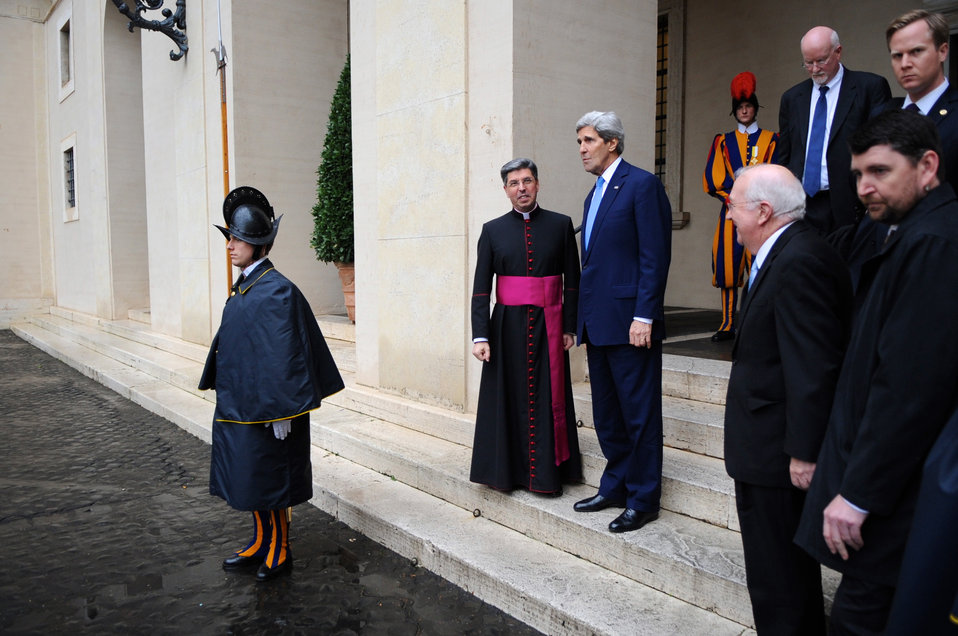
Secretary Kerry Bids Farewell to the Vatican Protocol Chief

U.S. Secretary of State John Kerry bids farewell to Vatican Chief of Protocol Monsignor Jose Bettancourt after he gave U.S. officials a tour of the Vatican and Apostolic Palace in Vatican City during a visit to Rome, Italy, on January 14, 2014.